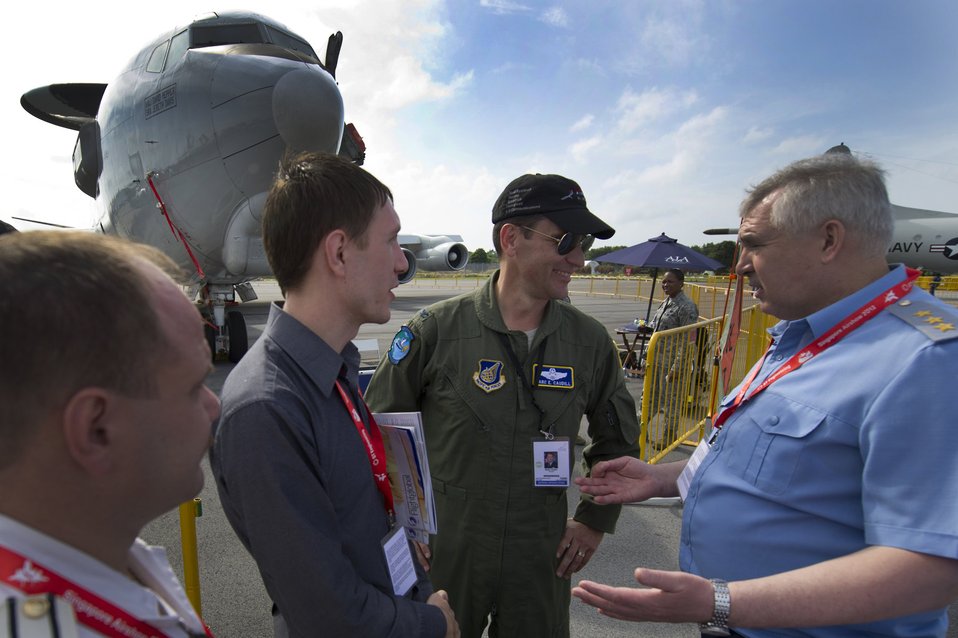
U.S., Russian airmen meet during Singapore Airshow 2012

U.S. Air Force Col. Marc Caudill, the U.S Pacific Command mission commander for the U.S. forces supporting the 2012 Singapore Airshow, speaks to Commander-in-Chief of the Russian Air Force Col. Gen. Alexander Zelin before touring the E-3 Sentry on Feb. 15, 2012, in Changi, Singapore. While being the third largest trade show in the world, the biennial Singapore Airshow also provides the opportunity for airmen from many different countries to interact and improve foreign relations.